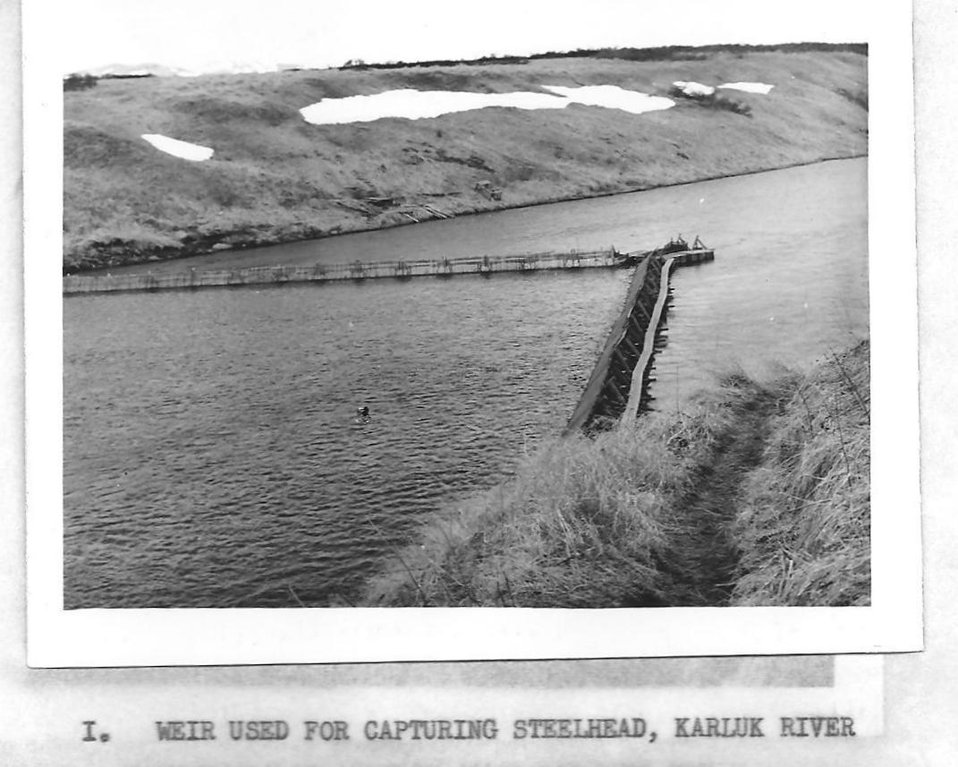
(1954) Karluk Weir

Credit: USFWS

Source and Contact: Kodiak National Wildlife Refuge